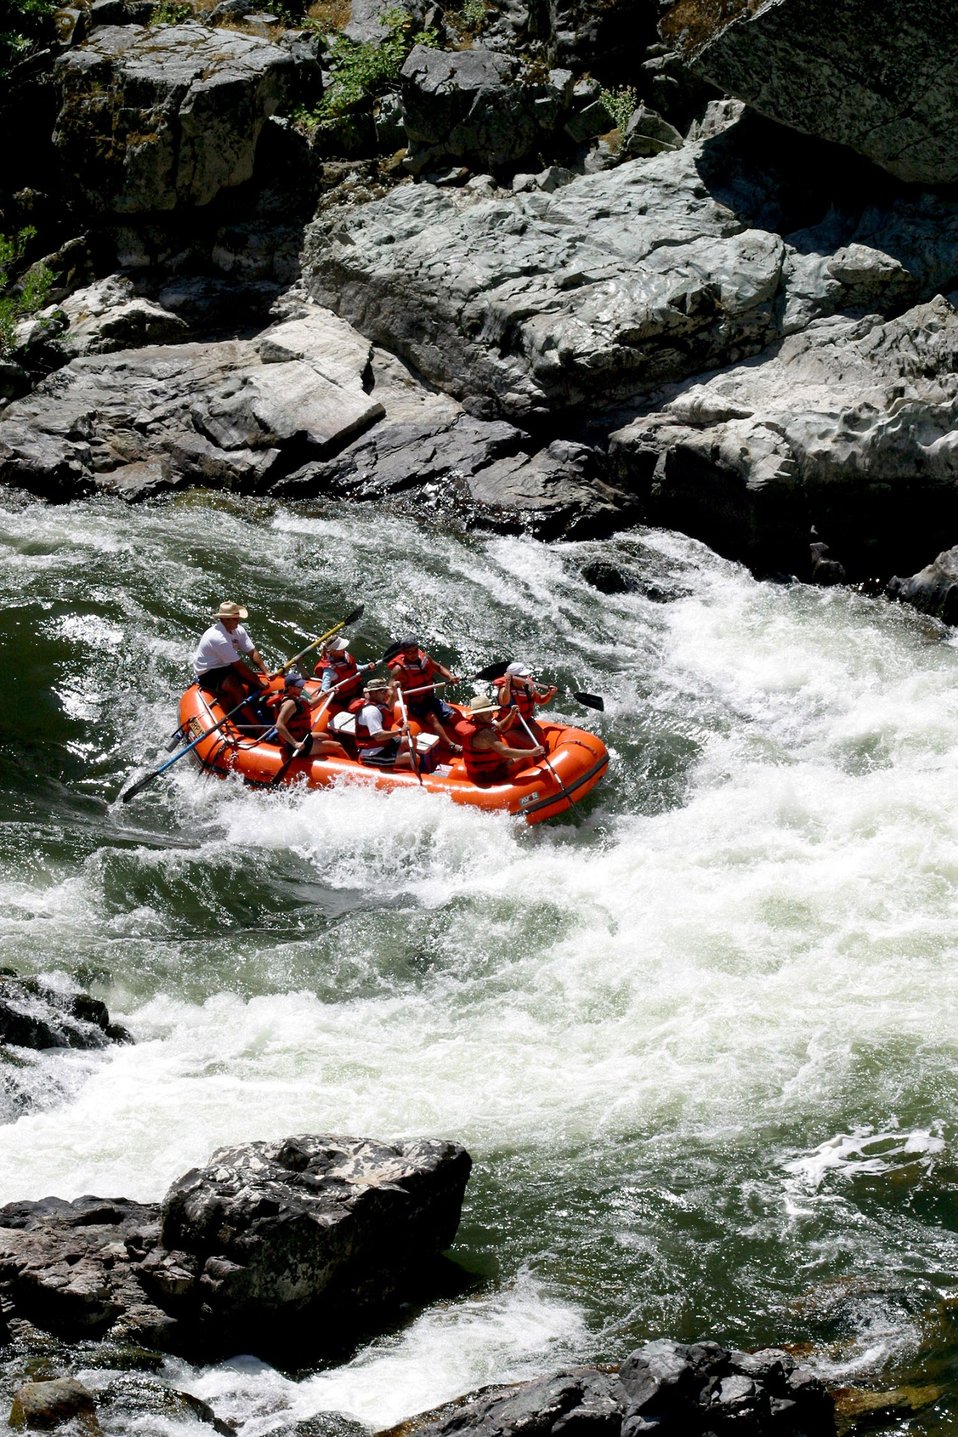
Boater at Grave Creek Falls